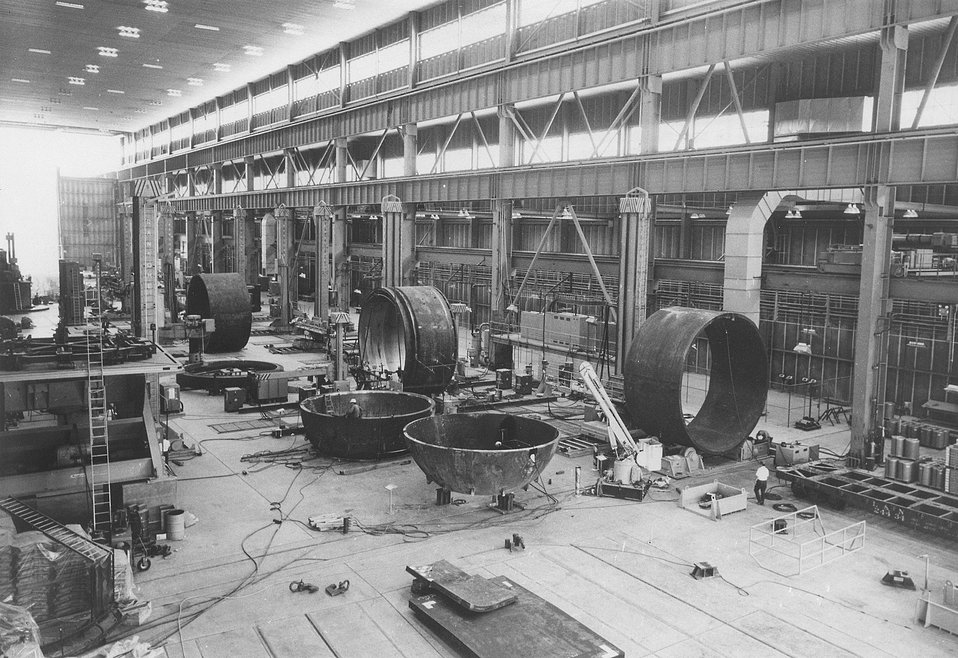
Indicative of private industry's growing participation in the atomic energy field is the new $20 million Babcock and Wilcox Company plant at Mt. Vernon, Indiana. The first job for the plant is the fabrication of the 800-ton vessel for the Dresden Unit No. 2 reactor. Circa 1967.